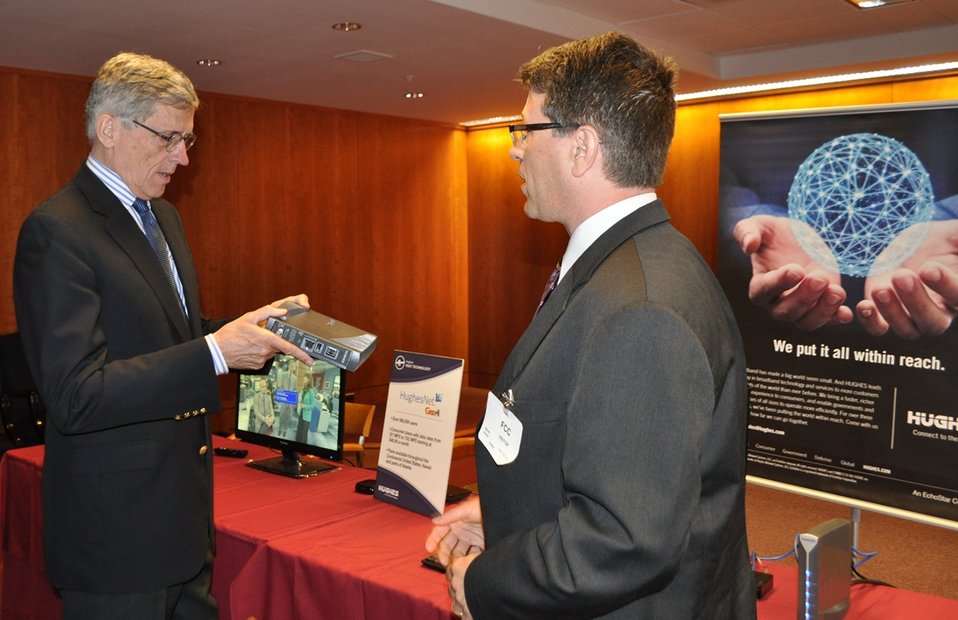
5.14.2014 Satellite Technology Demonstration

Chairman Tom Wheeler at the Satellite Technology Demonstration